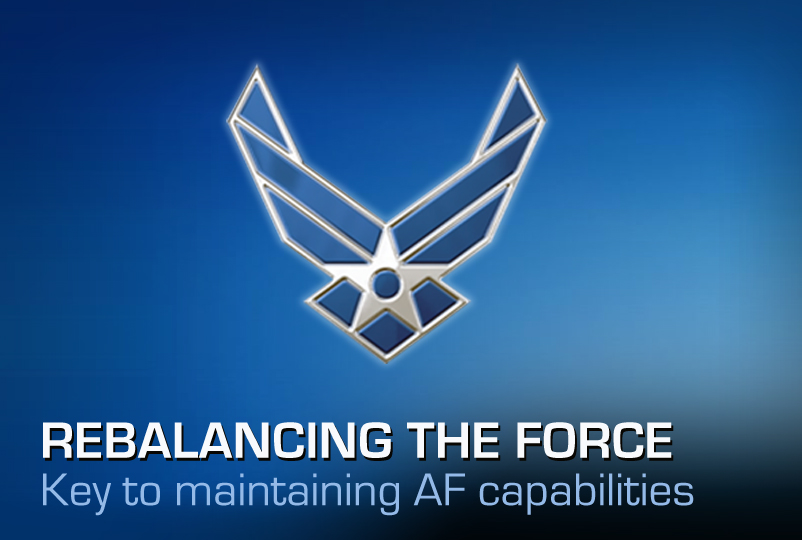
Rebalancing the Force